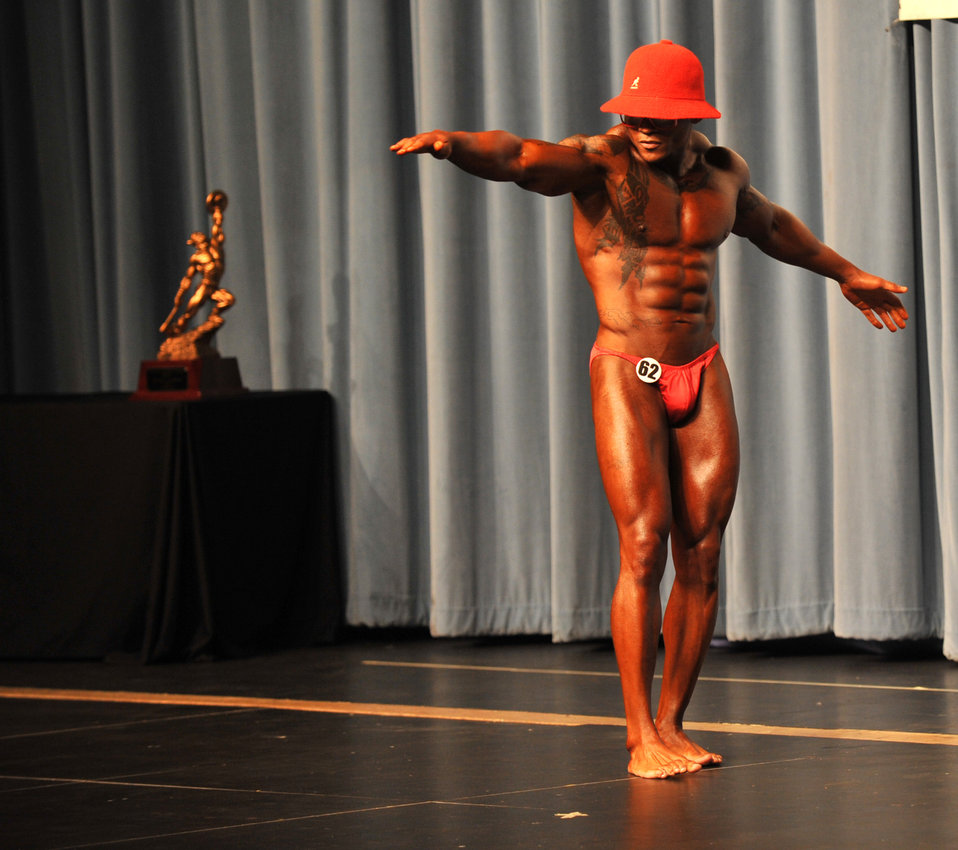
Pose for the win

Master Sgt. LaJuan Fuller, 366th Civil Engineer Squadron first sergeant, performs his routine during the evening portion of a body building competition April 28, 2012, in Boise, Idaho. Fuller’s wife, two sons and friends came out to watch the evening performance where the competitors chose a song and showed off different poses throughout the performance.